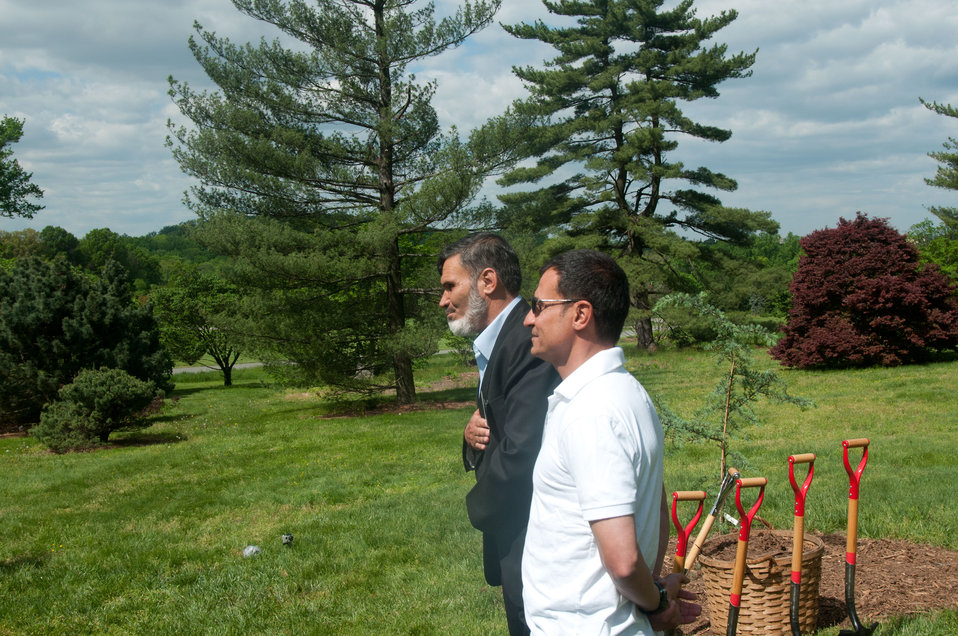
Afghan Ghazni Directorate of Agricultural Irrigation and Livestock Sultan Hossain (left) and Interpreter and Cultural Advisor Mohammad Saber Rahimi at the Arbor Day tree planting of a Cedrus deodara ('Karl Fuchs') at the U.S. National Arboretum, Washington, DC, on Friday, April 29, 2011. The tree is originally from Pakta Province and the most important tree in Afghanistan for timber.